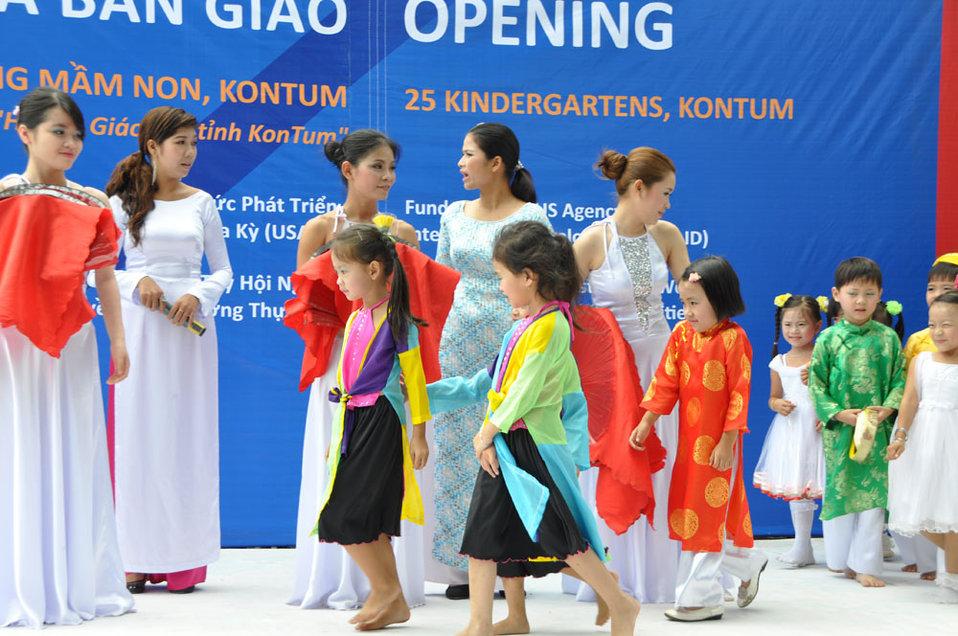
Children celebrate 25 refurbished and expanded kindergartens.